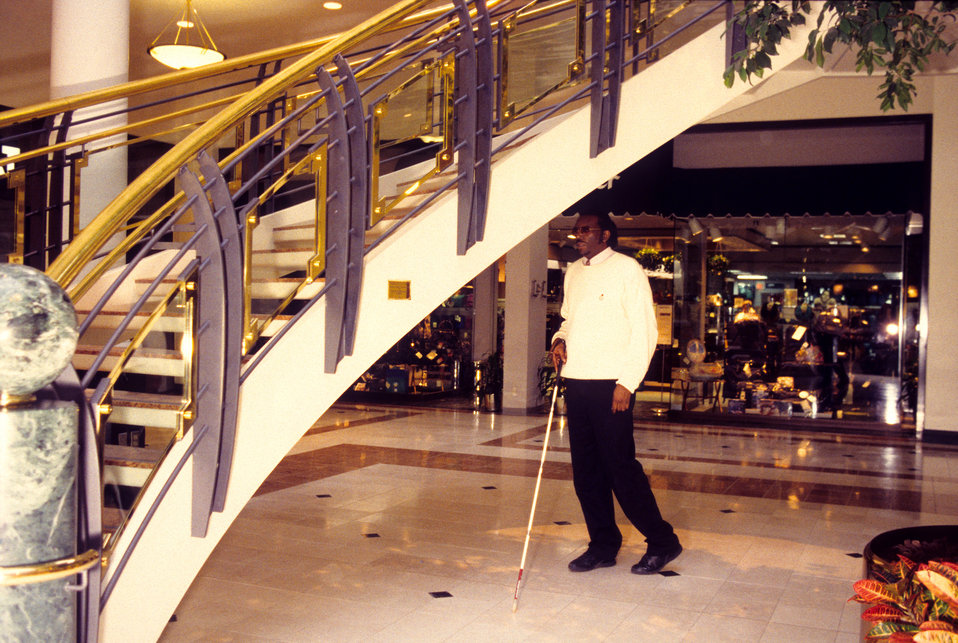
This 1996 image depicted a blind man who was walking inside a mall with the use of a walking cane. Note the dangerously low staircase with its minimal, to no headroom, beneath which he was passing . Because there was no warning as to the staircase's presence, he was about to crash into the underside of the stairs. Such overhanging objects, or structures with inadequate headroom, are hazards that a person's cane cannot detect.